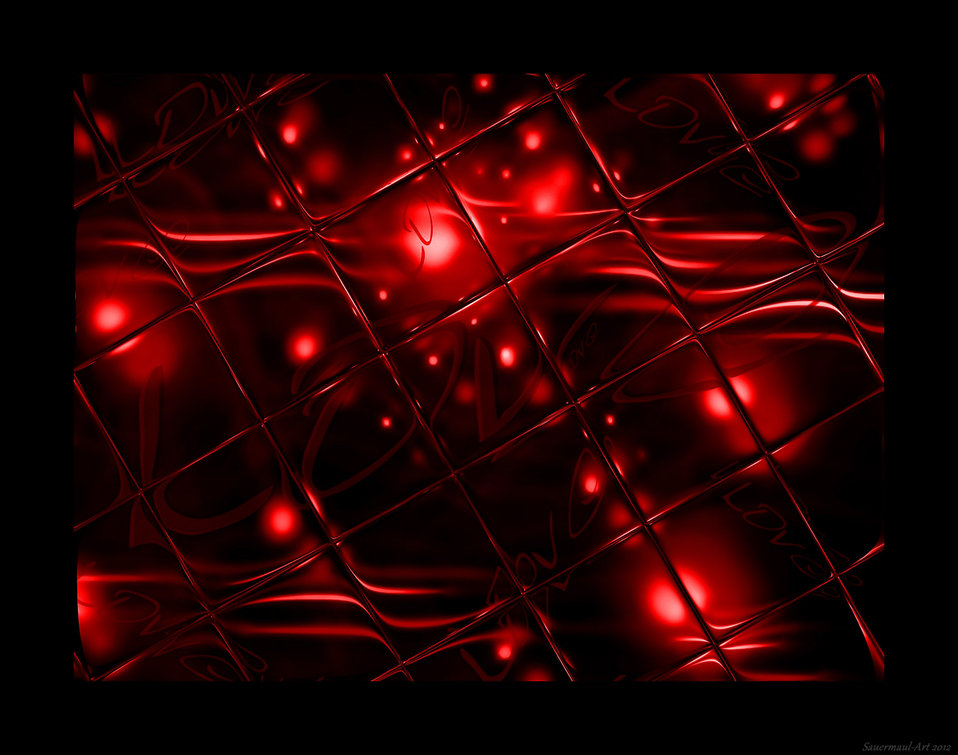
Picture of love in red

Declaration of love.